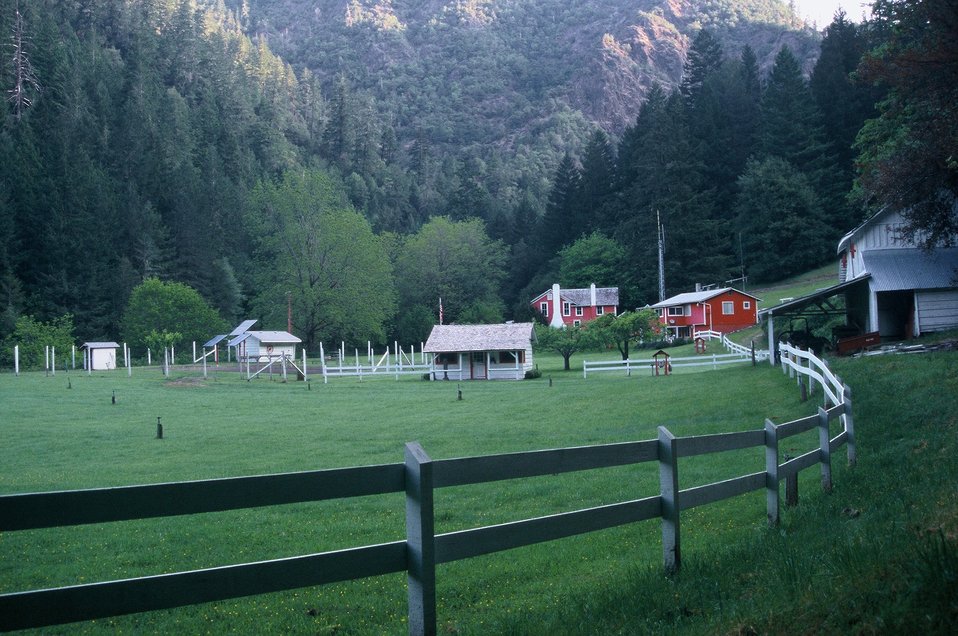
Wild section of the Rogue River from Grave Creek to Foster Bar May 19 to May 22.